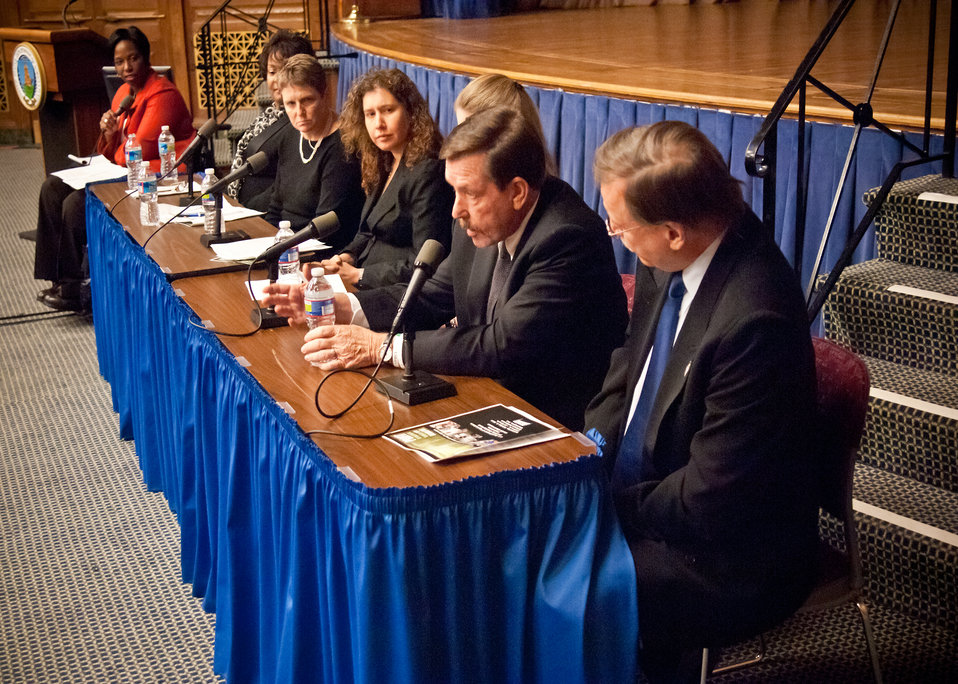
From left: Carmen Jones, Senior Advisor, Departmental Management the moderator of the USDA Panel of Success: Hiring and Employing Individuals with Disabilities and panel members Elaine Jones, Food and Nutrition Service, Robin Heard, Deputy Assistant Secretary for Administration, Francesca Yabraian, Office of the Deputy Assistant Secretary for Administration, Gari Jo Green, Office of Inspector General, Richard Swenson, Departmental Management, William Bethel, National Institute of Food and Agriculture offers their experience and advice to U.S. Department of Agriculture employees during the U.S. Department of Agriculture National Disability Employment Awareness Month event in Washington, DC, on Wednesday, October 5, 2011. Agriculture Secretary Tom Vilsack is dedicated to establishing the USDA as the lead Federal agency in employing individuals with disabilities. The theme for the event is “Profit by Investing in Workers with Disabilities.” USDA is committed to ensuring that all our programs are accessible and inclusive of individuals with disabilities.